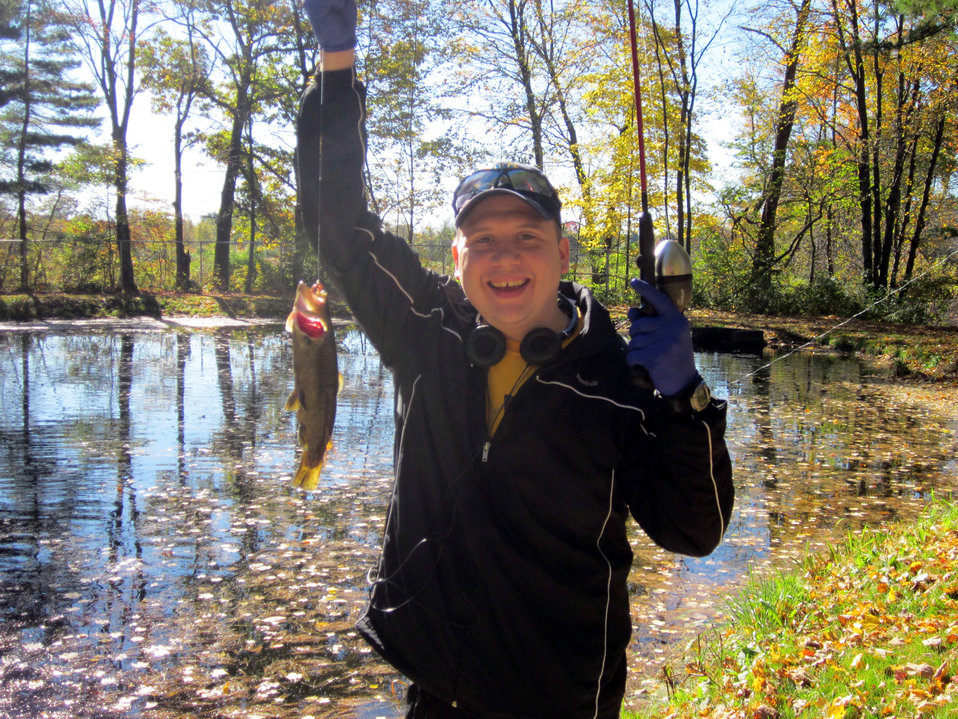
Success!

October 13, 2012, Sunderland, MA: On his first visit to a fishing event at the U.S. Fish and Wildlife Service's Richard Cronin National Salmon Station, Kenny 'Ace' DeSalvo shows his catch.